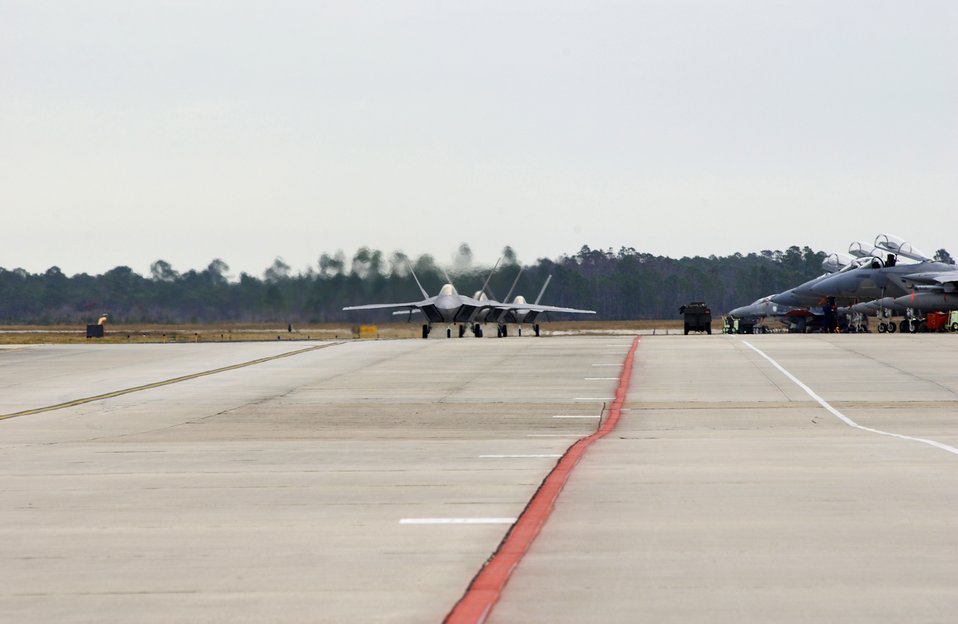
More Raptors have landed

TYNDALL AIR FORCE BASE, Fla. -- Three F/A-22 Raptors taxi on the flightline here Jan. 7 as they arrive at their new home from the production plant in Marietta, Ga. Five new Raptors now call the 43rd Fighter Squadron home, increasing the squadron's inventory to 18 aircraft.